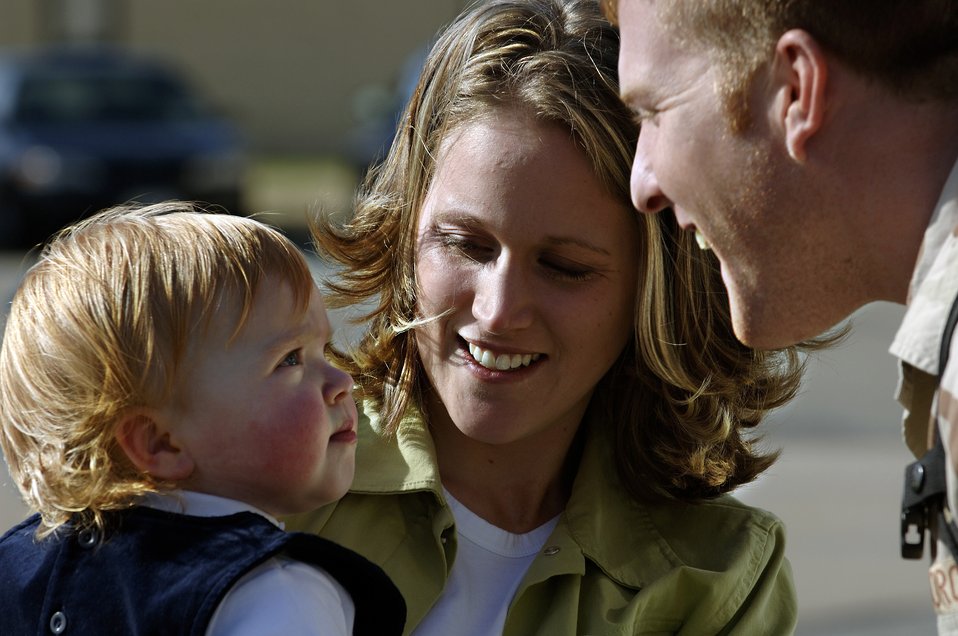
Return from Iraq

LANGLEY AIR FORCE BASE, Va. -- Staff Sgt. Jon Hendrickson greets his wife, Cara, and daughter, Ashton, Jan. 9 as he returns home from an eight-month deployment to Camp Bucca, Iraq. Sergeant Hendrickson is with the 1st Security Forces Squadron.